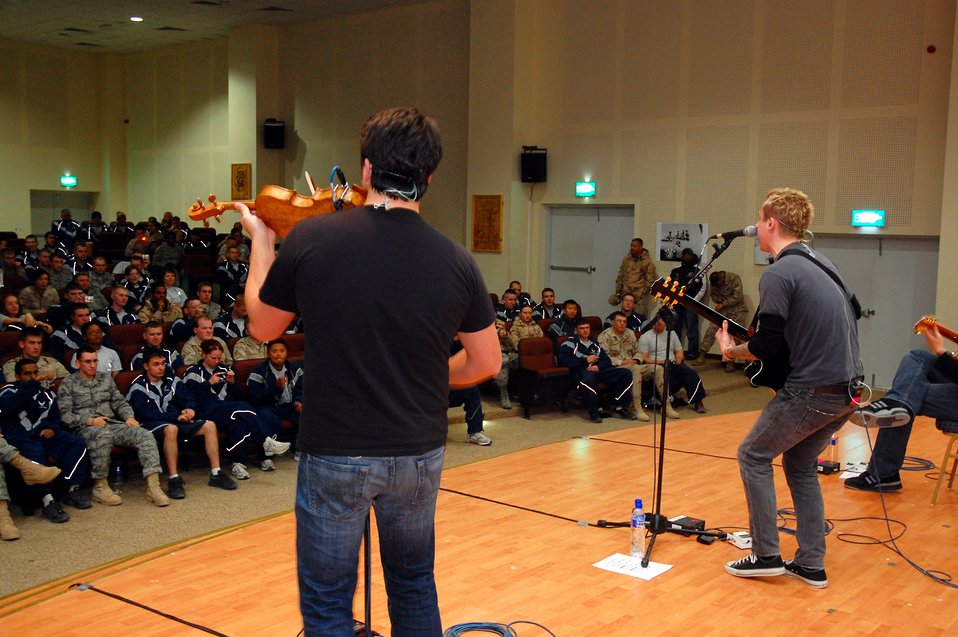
Yellowcard rocks servicemembers in Southwest Asia

More than 250 servicemembers enjoy an hour-long performance by the Yellowcard band Jan. 12 at a Southwest Asia air base. The tour was a way for the band to say thank you to American servicemembers on their five-day United Service Organizations' tour.